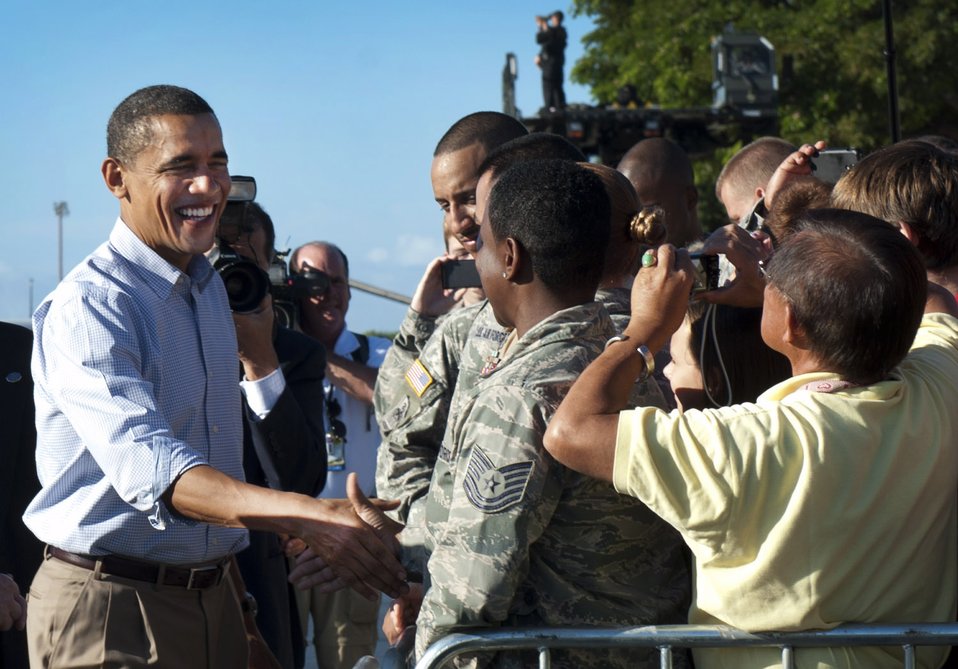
President Obama meets with Hickam Airmen

President Barack Obama greets Airmen and their families as he prepares to depart Joint Base Pearl Harbor-Hickam, Hawaii, following the Asia-Pacific Economic Cooperation conference in Honolulu on Nov. 15, 2011. The Airmen who met President Obama were selected by base leaders based on merit and a job well done.